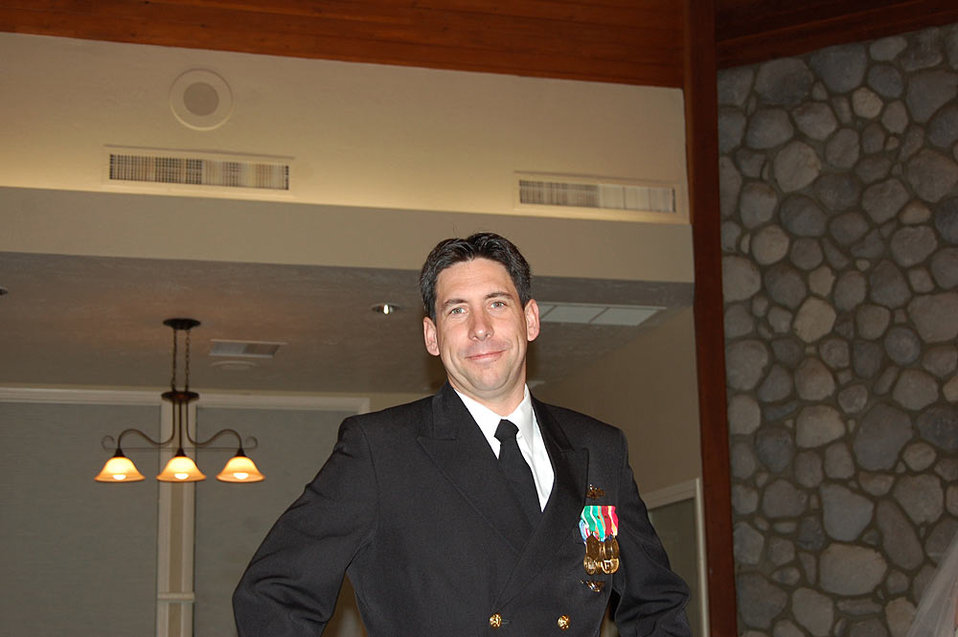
Scott Gronbach-Pacific Region

Scott Gronbach served as an Electronics Technician on active duty in the U.S. Navy from 1998-2008 onboard the USS Belleau Wood (LHA-3), USS Essex (LHD-2), USS Peleliu (LHA-5) and at NAS Whidbey Island. When not working for the U.S. Fish & Wildlife Service’s Abernathy Fish Technology Center as a Facilities Operations Specialist, he proudly serves as an Intelligence Officer in the Navy Reserves.